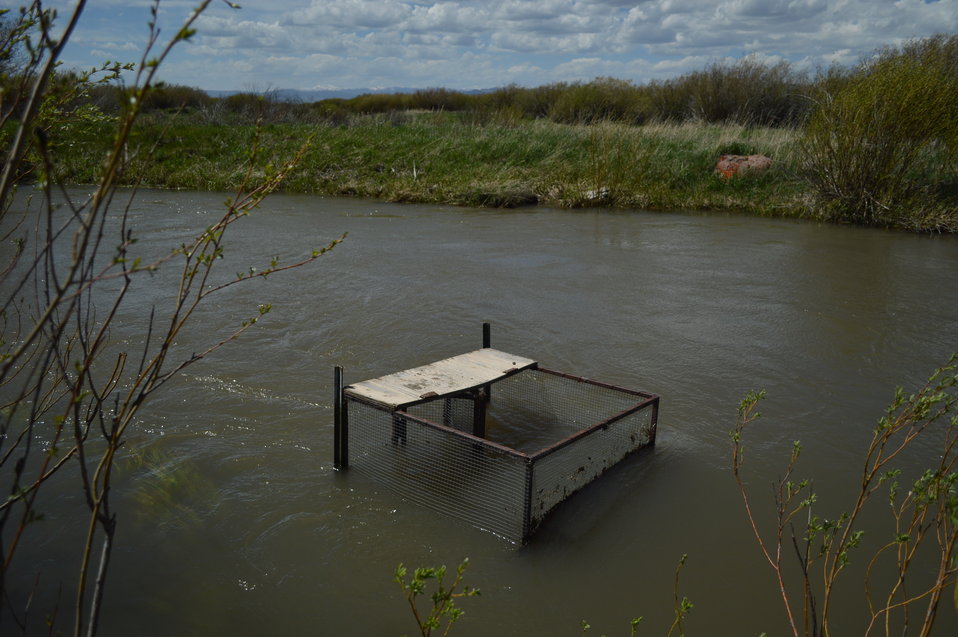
Regional Leadership Visit to Montana 2014